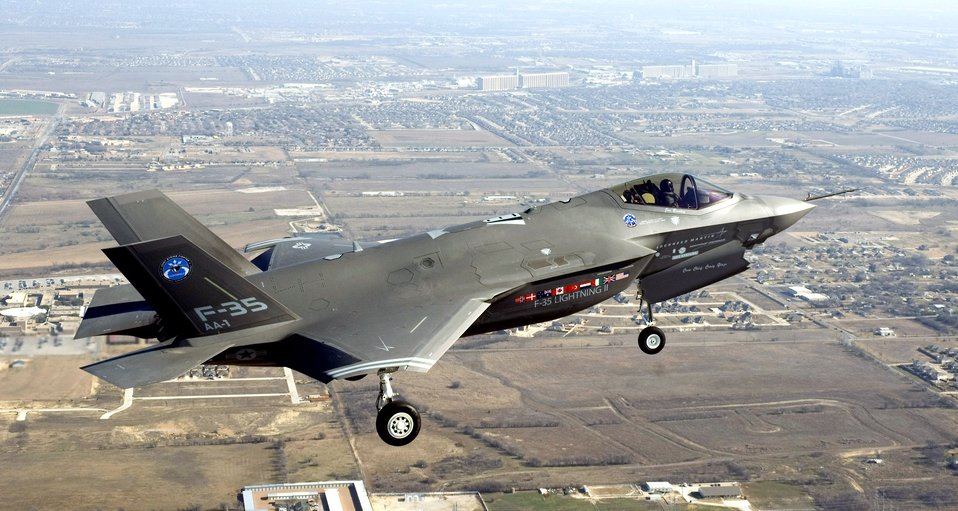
Lightning in sky for first time

The F-35 Lightning II Joint Strike Fighter makes its initial flight Dec. 15 over Fort Worth, Texas.